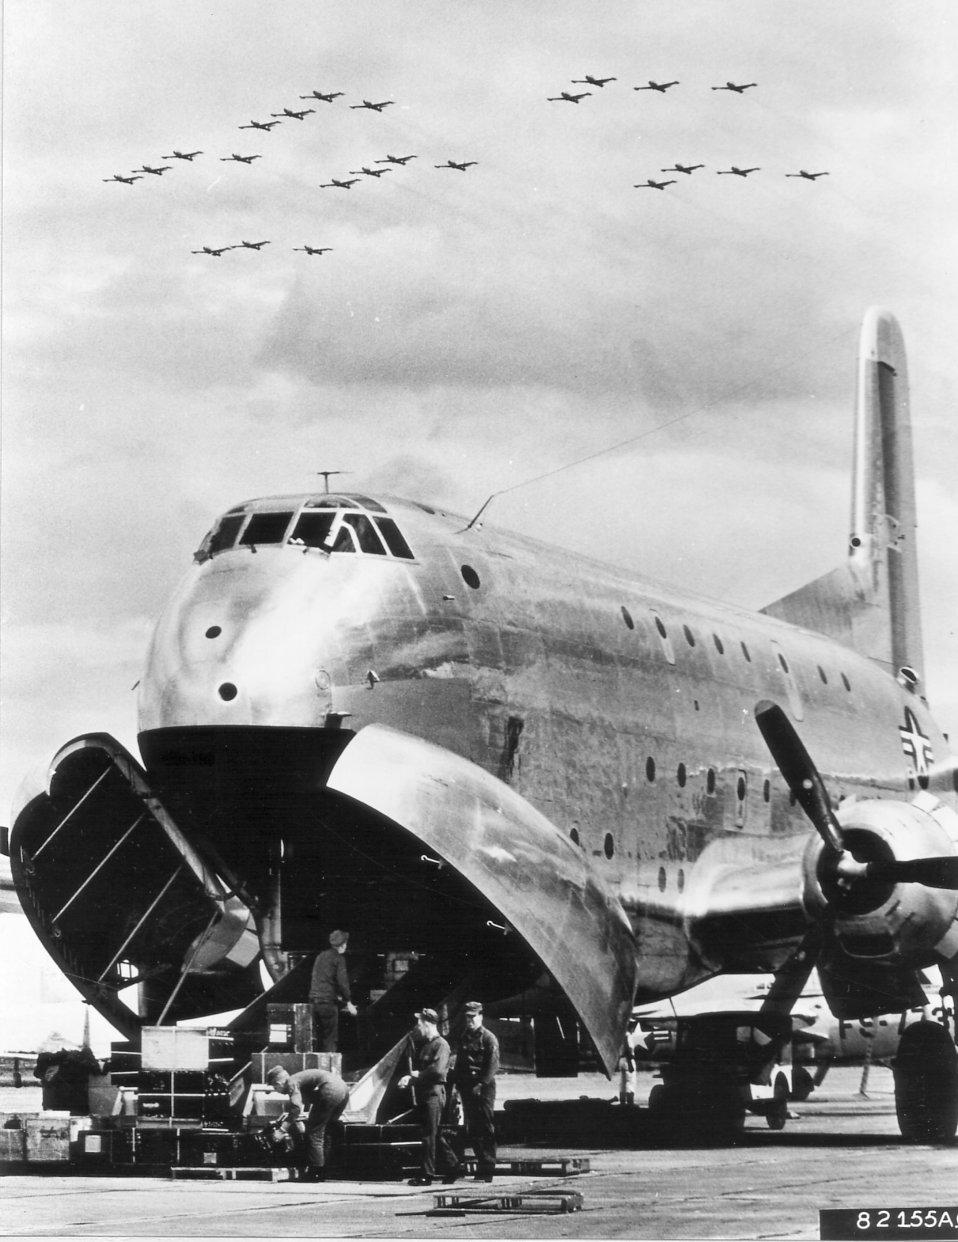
C-124 Globemaster

1950s -- Flashing through the sky above a U.S. Air Force C-124 Globemaster, F-84G Thunderjets of the 27th Fighter Escort Wing arrive at a Japan Air Defense Force base in northern Japan after completing a trans-Pacific flight. The F-84s flew 7,800 miles from their home base to Japan and set a new record for over-water flight by single engine fighter aircraft. They flew the last 2,575 miles of their trip using in-flight refueling, October 1952.